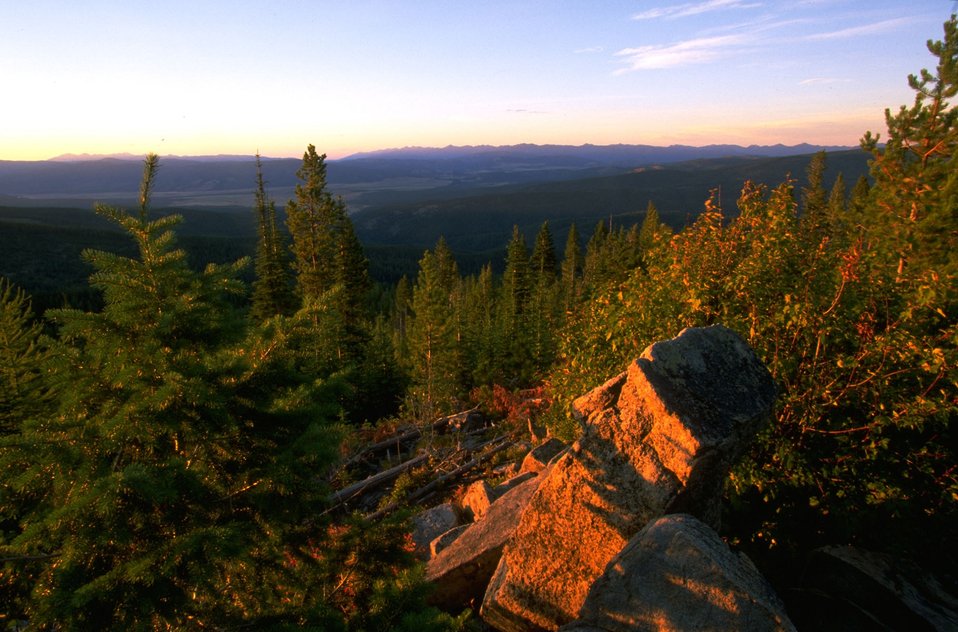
Garnet Back Country Byway view from overlook